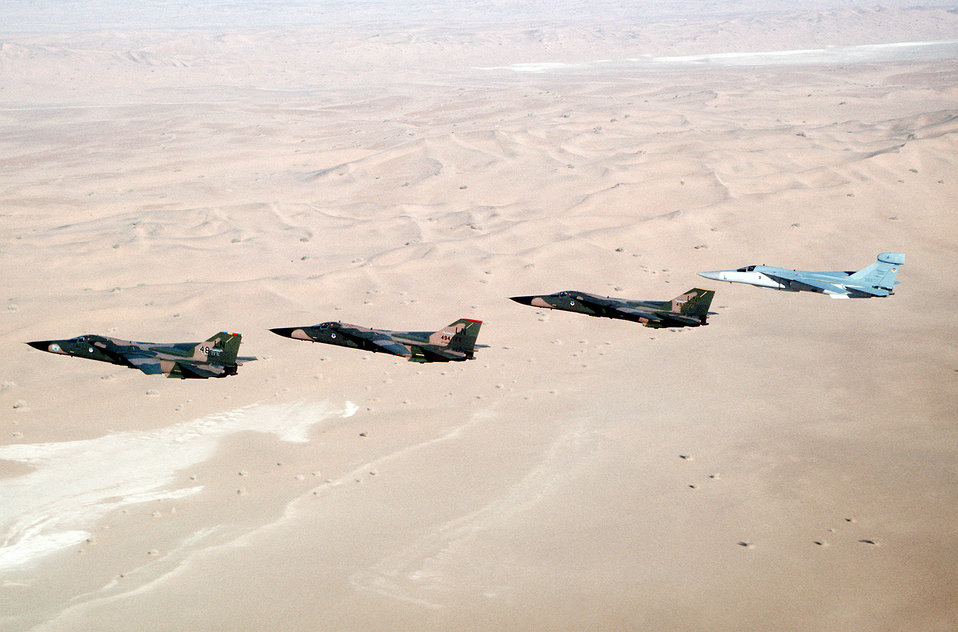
F-111F

1990's -- F-111F aircraft and an EF-111A Raven aircraft, rear, fly in formation over the desert during Operation Desert Shield. The aircraft are assigned to the 48th Tactical Fighter Wing.